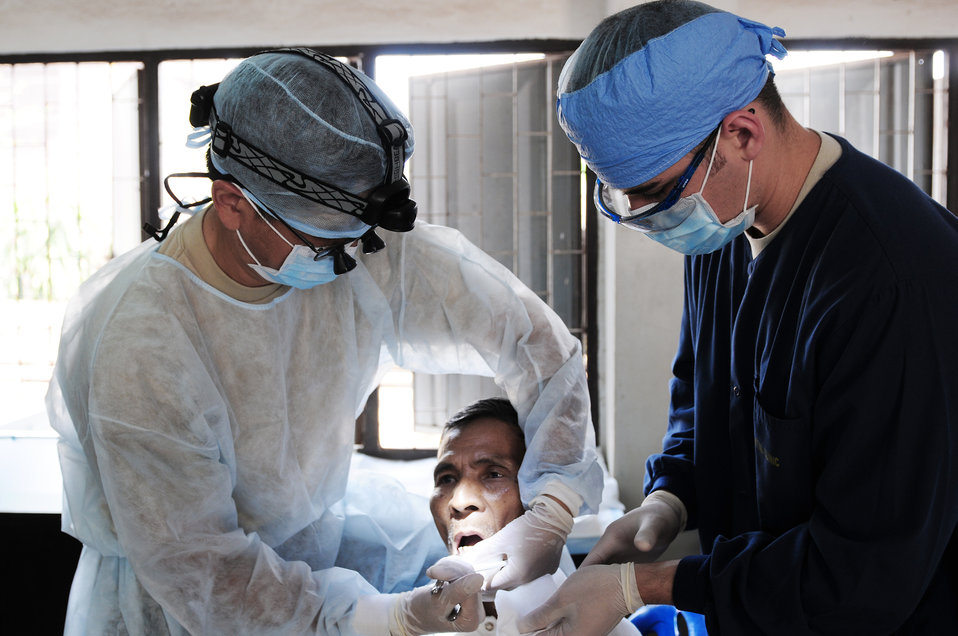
Mulitlateral team helps more than 1,500 Thai residents

Maj. (Dr.) Kurt Nishiguchi and Staff Sgt. Vincent Nelson perform a tooth extraction on a local man during a Cope Tiger 2010 medical civic assistance project March 9, 2010 in Thailand. Doctor Nishiguchi is a dentist assigned to the 624th Regional Support Group at Joint Base Pearl Harbor-Hickam, Hawaii and Sergeant Nelson is a dental assistant from the 724th Aeromedical Staging Flight at Andersen Air Force Base, Guam.